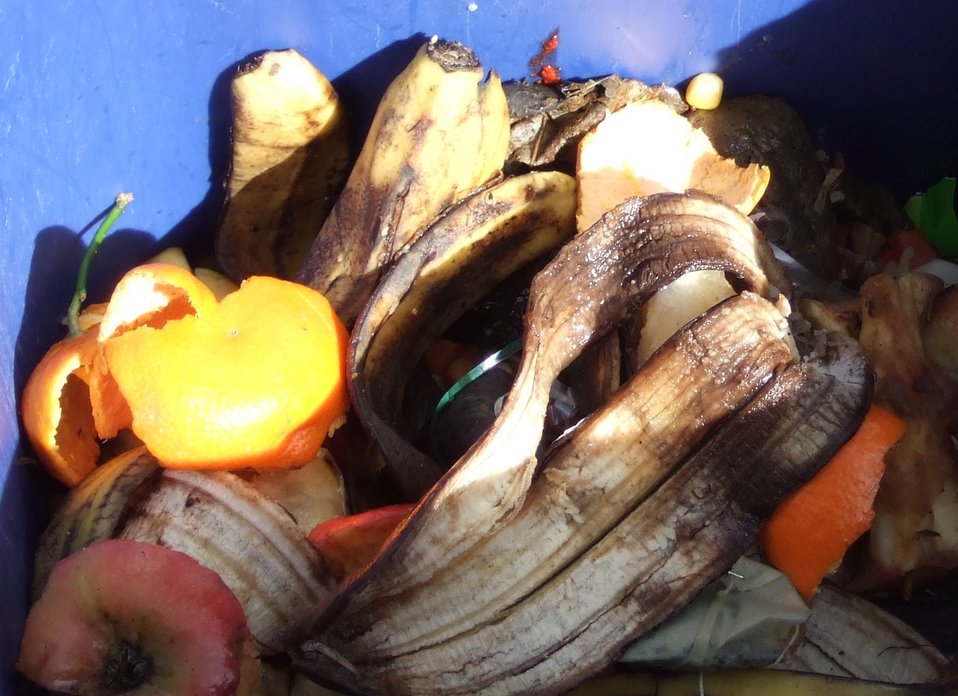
In Landfills, Food Waste Contribute To Climate Change

Diverting food waste from landfills not only conserves limited space, but also helps to reduce greenhouse gas emissions. In landfills, organic materials, like food scraps and yard trimmings, are broken down by bacteria to produce methane, a potent greenhouse gas.